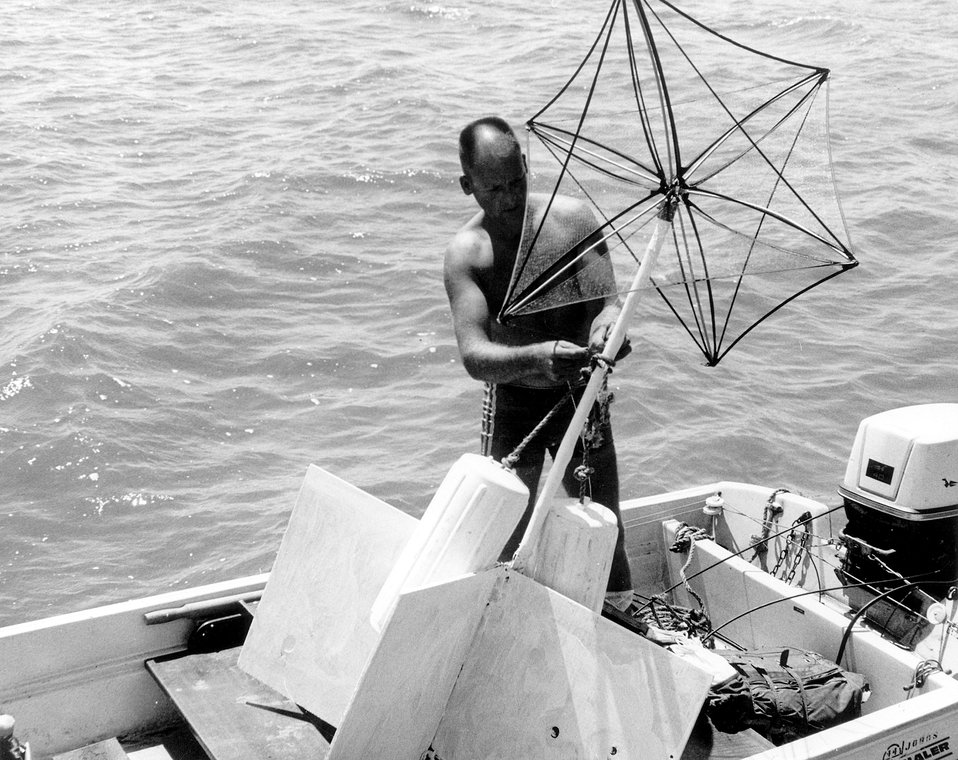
A Puerto Rico Nuclear Center (PRNC) researcher prepares a radar drogue for tracking currents in the Bay of Jobos on Puerto Rico's southeastern coast. Circa 1972.